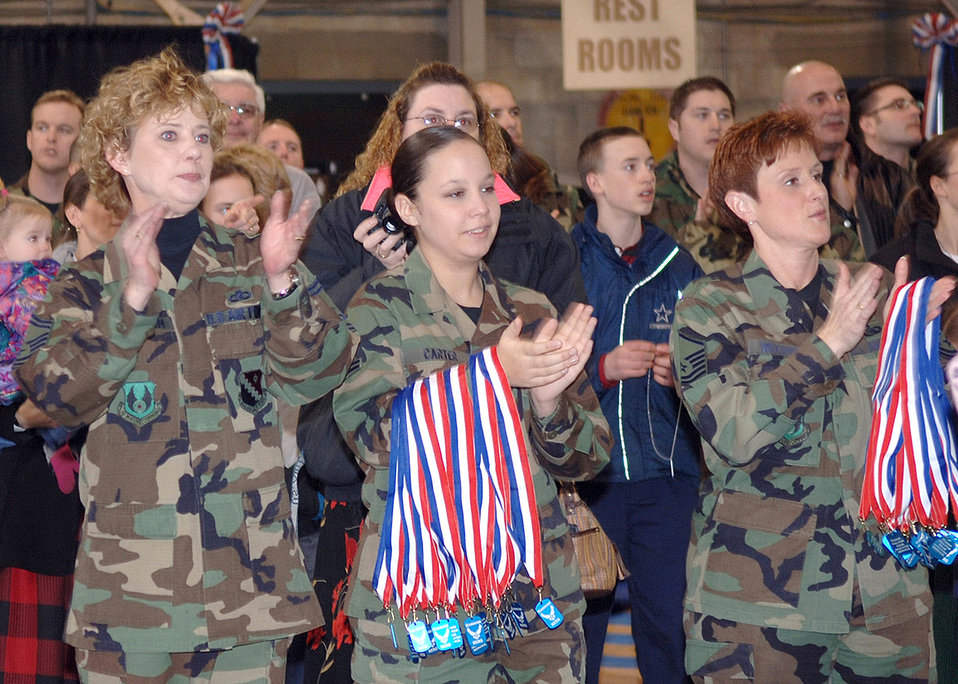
Welcome Home Heroes

Base personnel and family members applaud recently returned deployers during the Hereos' Homecoming at Hanscom Air Force Base, Mass., Jan. 19.